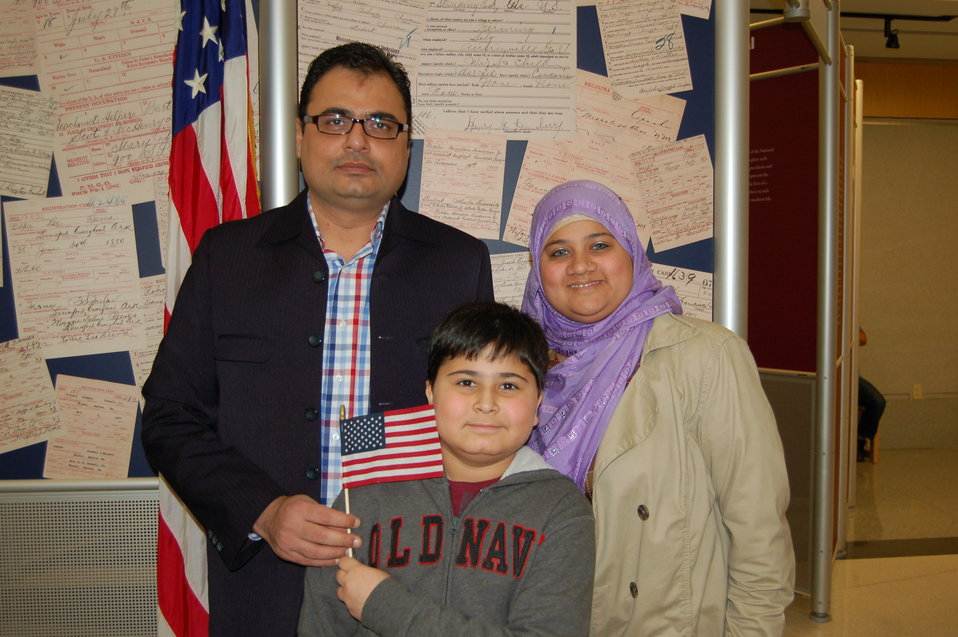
New Citizens